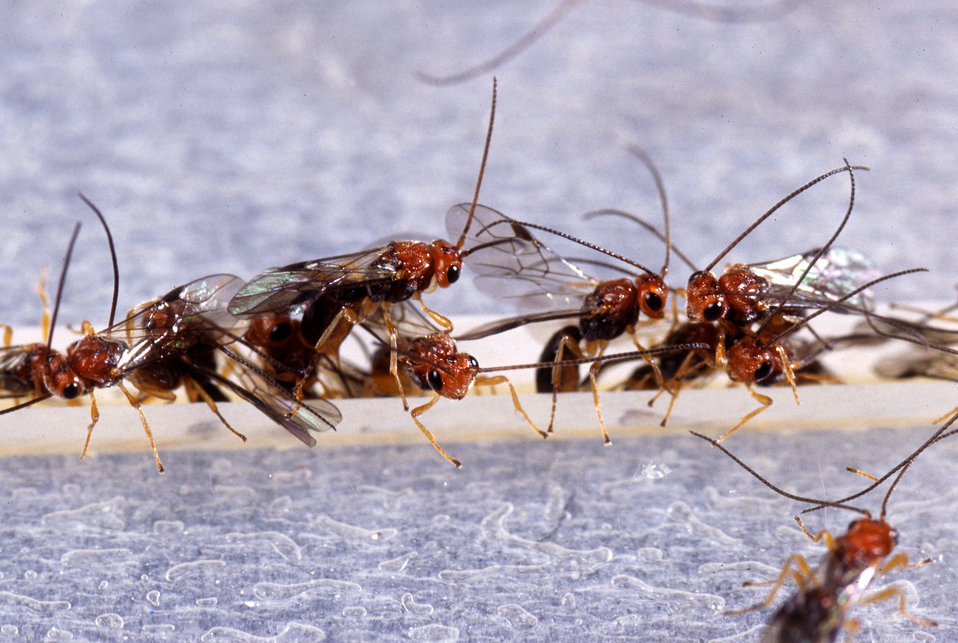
Biosteres arisanus wasps inject their eggs into oriental fruit fly eggs.